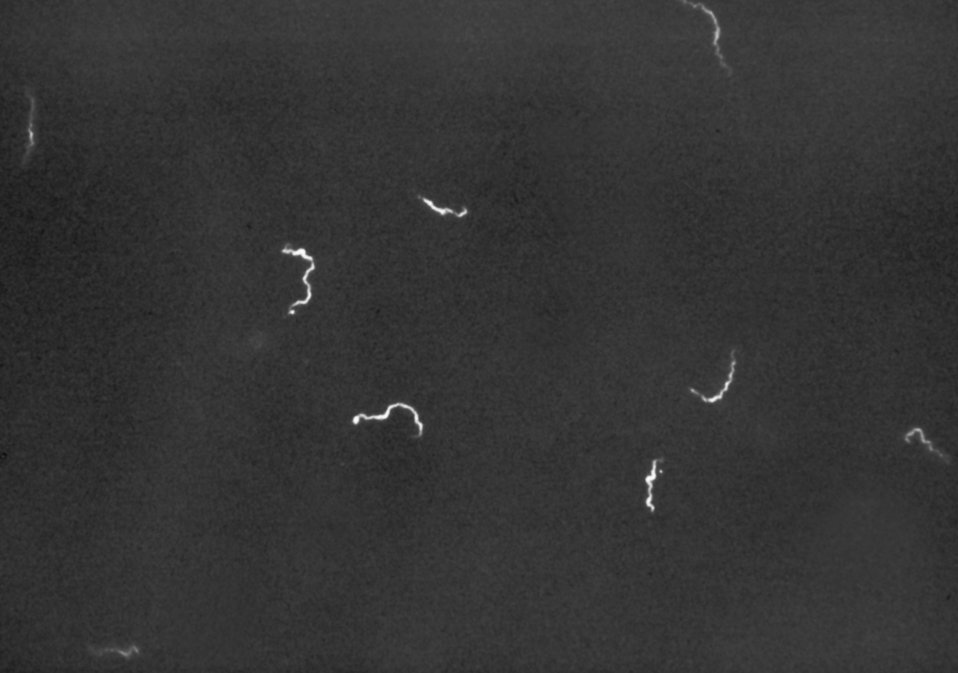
Dark field photomicrograph of Treponema pallidum bacteria.